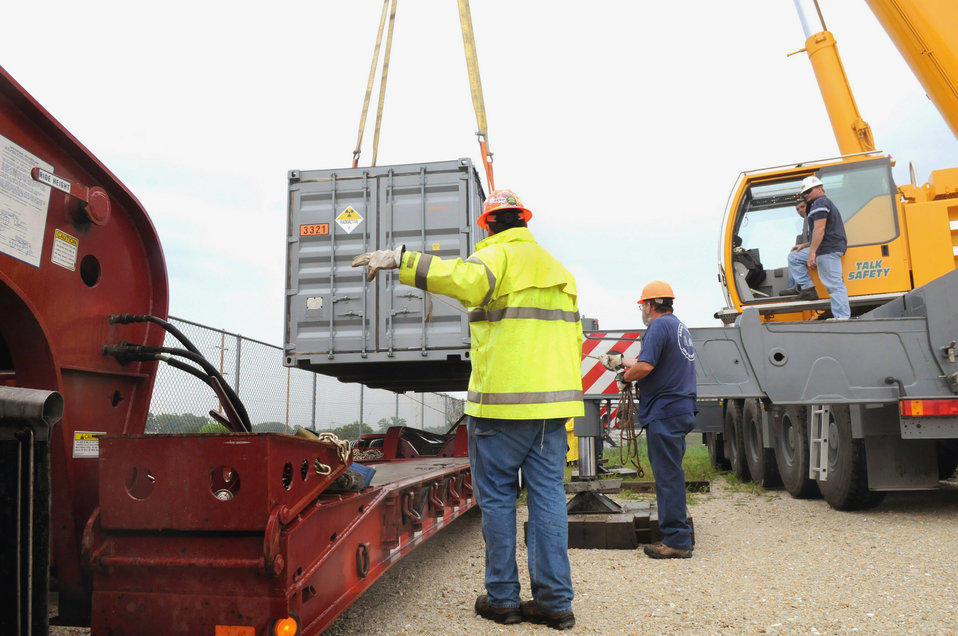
Argonne waste transport

Workers load drums of transuranic waste into a custom-designed container to be transported to the Waste Isolation Pilot Plant in New Mexico for disposal.